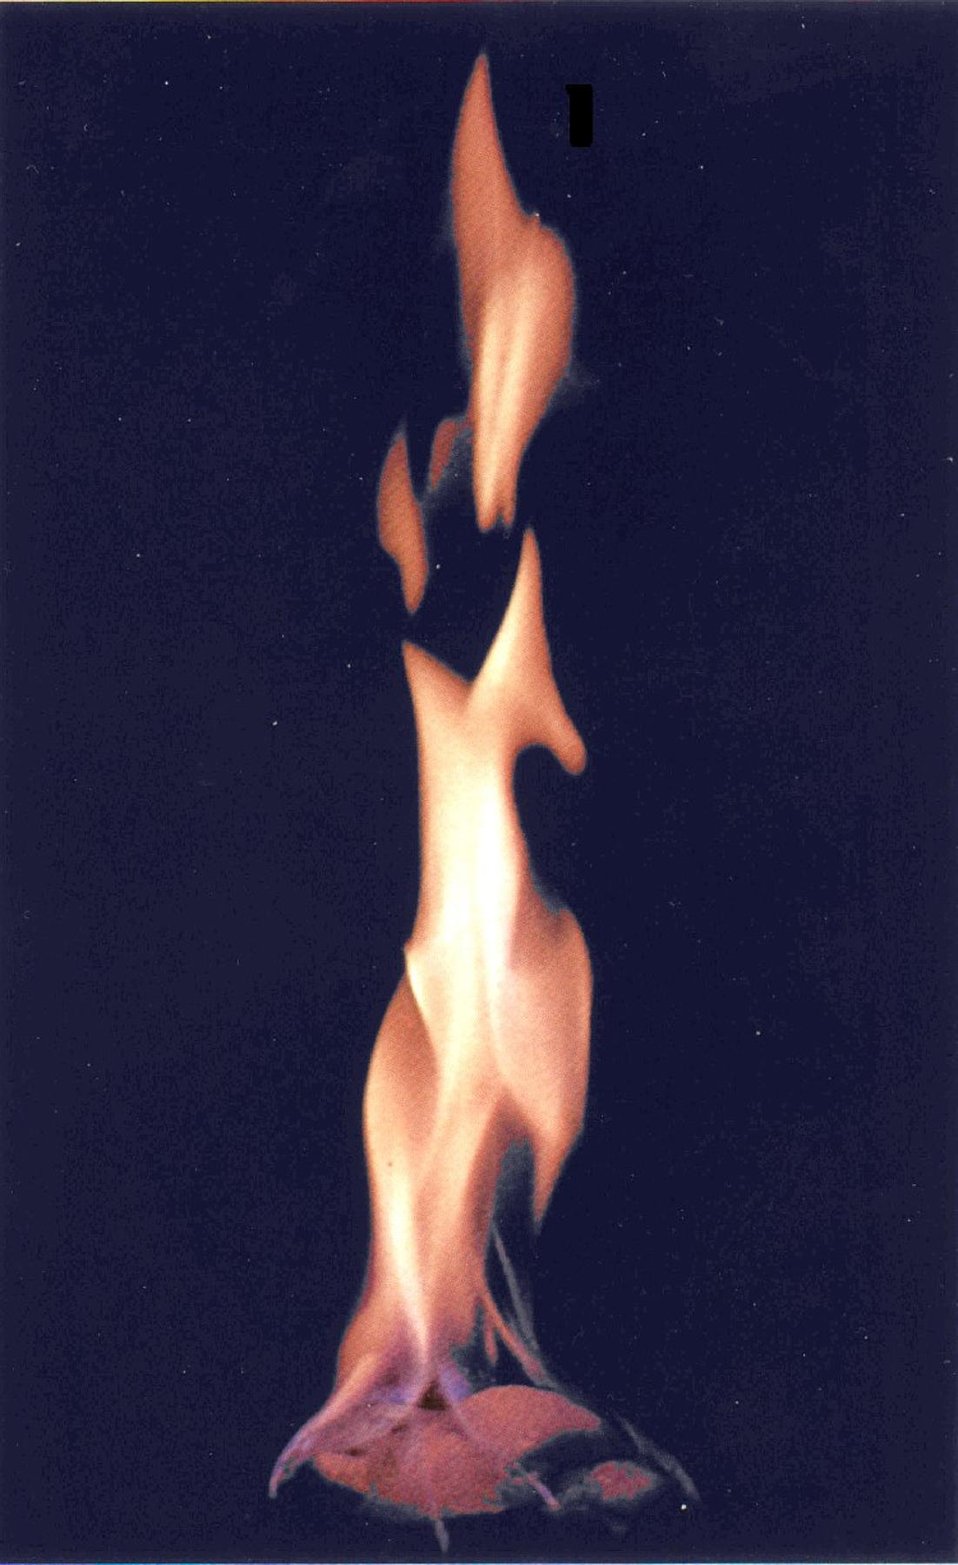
Ice-liked gas hydrate trapped within rock deep below the Earth's surface may hold promise for new energy sources.

The ice-like substance called gas hydrate (methane gas) is trapped within rock three-quarters of a mile below. Alaska and Canada's frozen tundra, and in offshore locations scattered around America's coastline. In early 2002, PNNL researcher will obtain frozen core samples from the MacKenzie Delta in Canada that contains methane gas. These 'rock Gas' samples from the Mallik Research Well may unlock future U.S. energy independence if a safe and economic harvesting process can be perfected. Pacific Northwest National Laboratory researchers have joined with leading scientists worldwide in a collaborative effort to pursue a massive energy reserve that, by itself could keep America powered into the next century.